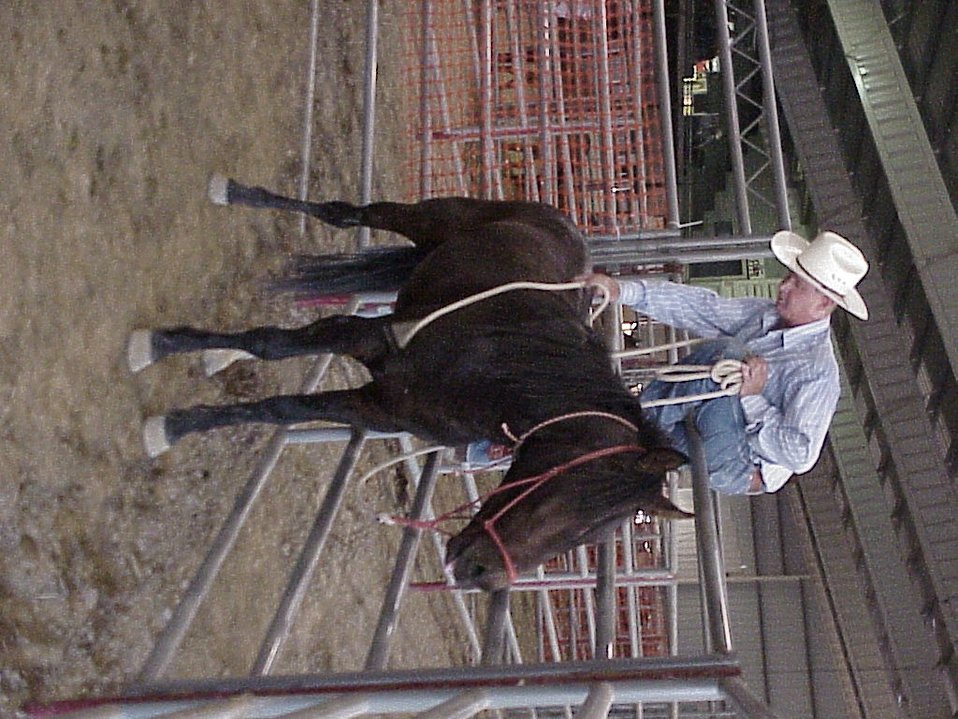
Horse Gentler Mario Johnson Lewiston Wild Horse and Burro Adoption Program Auction WHB indoor auction Cottonwood Field Office UCSC Upper Columbia Salmon Clearwater District